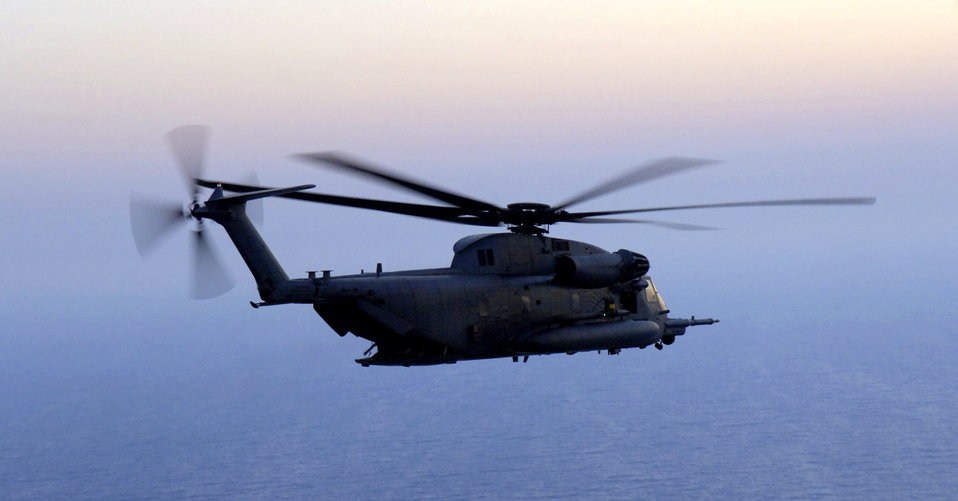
Lebanon operations

OVER THE MEDITERRANEAN SEA (AFPN) -- A MH-53M Pave Low helicopter flies from Beirut, Lebanon to Cyprus July 24. The helicopter is part of the 352nd Special Operations Group out of Royal Air Force Mildenhall, England, deployed to Cyprus to help with the transportation of American citizens from Lebanon.